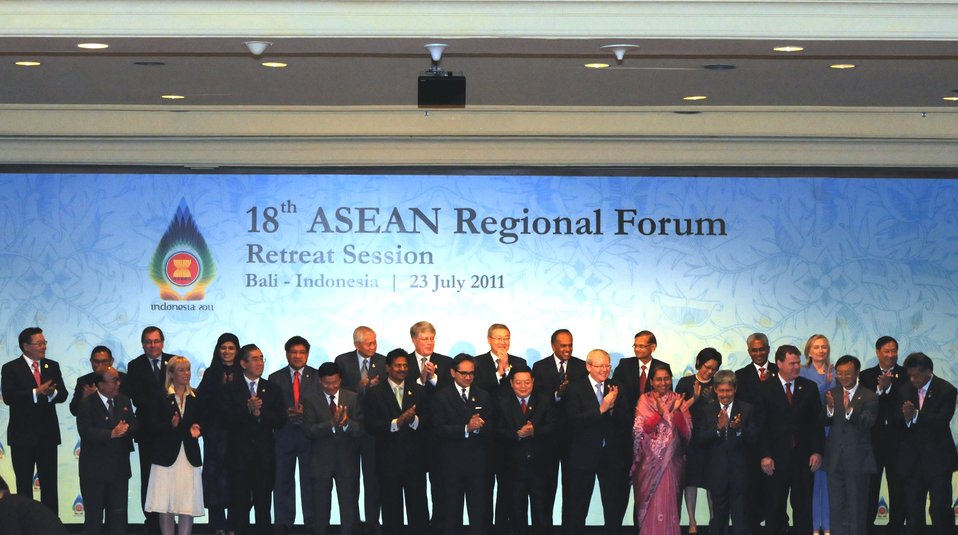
Secretary Clinton and ASEAN Foreign Ministers Pose for a Family Photo

U.S. Secretary of State Hillary Rodham Clinton and ASEAN Foreign Ministers pose for a family photo at the 18th ASEAN Regional Forum Retreat Session in Bali, Indonesia, on July 23, 2011. Participant countries include: Mongolia, Burma, New Zealand, Pakistan, Papua New Guinea, Philippines, Russia, Republic of Korea, Singapore, Sri Lanka, Thailand, Timor-Leste, United States, Vietnam, DPRK, European Union, India, Japan, Laos, Malaysia, Indonesia, Cambodia, Australia, Bangladesh, Brunei, Canada, China, and the Secretary General of ASEAN.